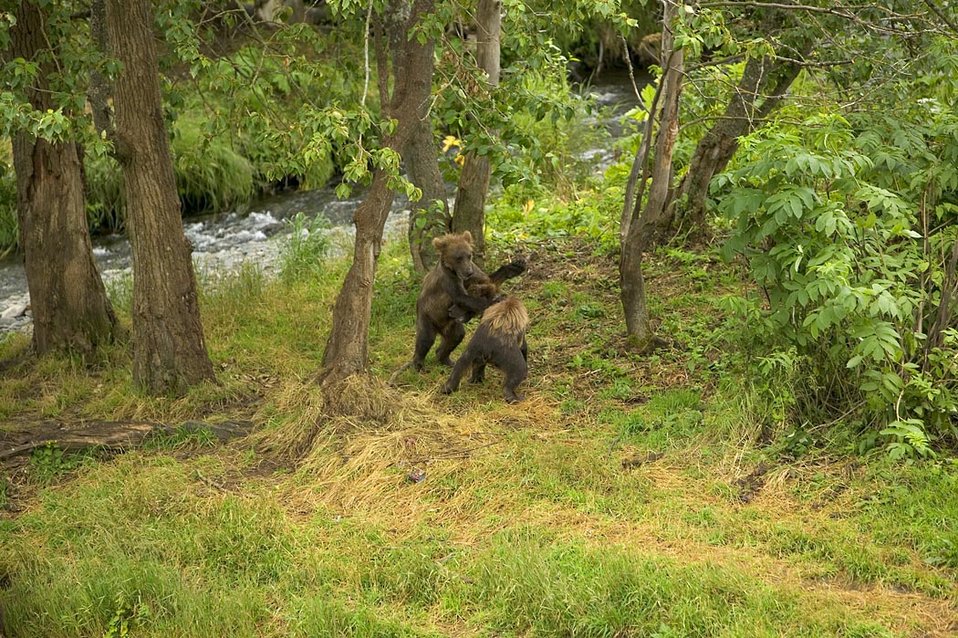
Brown bear cubs playing by river

Two grizzly bear cubs playing on their hind legs in wooded area.